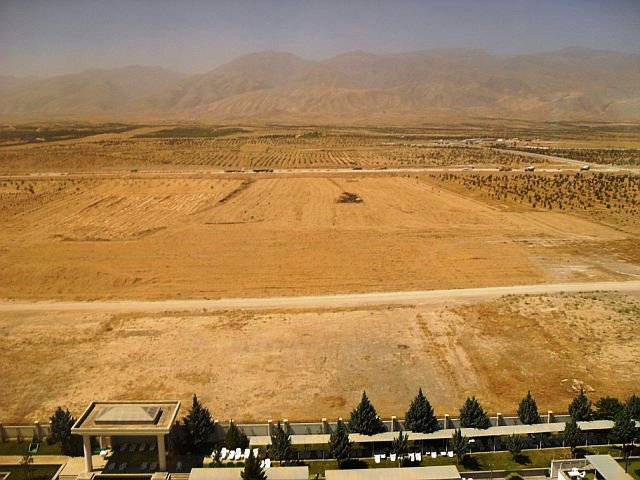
SCA Special Assistant Morgan Takes a Photo of Ashgabat, Turkmenistan

Rebecca S. Morgan, Special Assistant for the Bureau of South and Central Asian Affairs, takes a photo of Ashgabat, Turkmenistan, June 14-16, 2010.